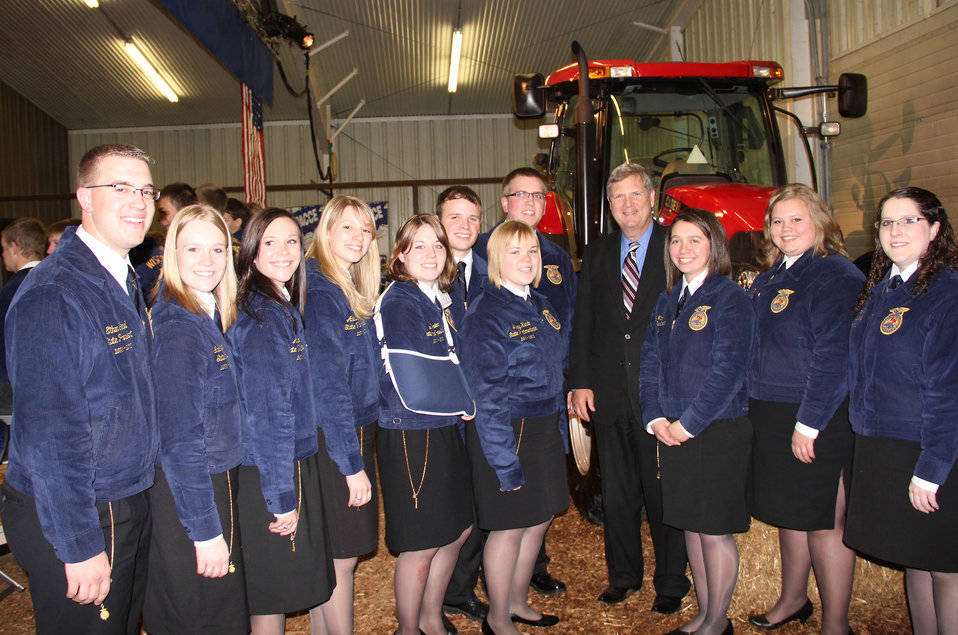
Agriculture Secretary Tom Vilsack stands with Wisconsin FFA Officers at the University of Wisconsin-Platteville, WI on Wednesday, April 18, 2012.